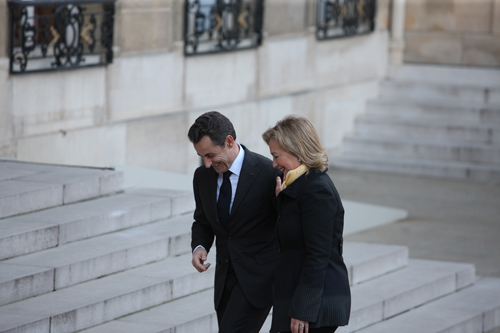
Secretary Clinton Is Greeted By French President Sarkozy

U.S. Secretary of State Hillary Rodham Clinton bids farewell to U.S. Ambassador to France, Charles H. Rivkin, and his wife, Mrs. Tolson, at Le Bourget Airport in Paris, France, on March 15, 2011.